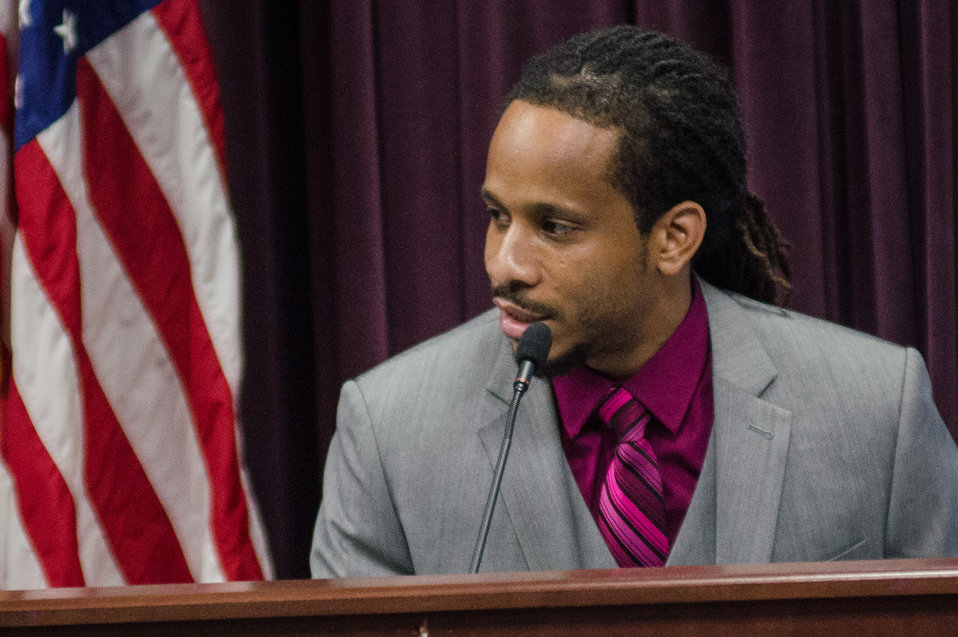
U.S. Department of Agriculture (USDA) Office of Advocacy and Outreach at Virginia State University (VSU) 1890 Program Liaison and event organizer Antonio McLaren welcomes farmers to the 'VSU, USDA and Virginia Farmers Working Together” outreach workshop at the VSU, L. Douglas Wilder building on Thursday, Mar. 7, 2013, in Petersburg, VA. Farmers shared and learned new ways to do more with USDA services, and how to apply for programs that will help grow their business.